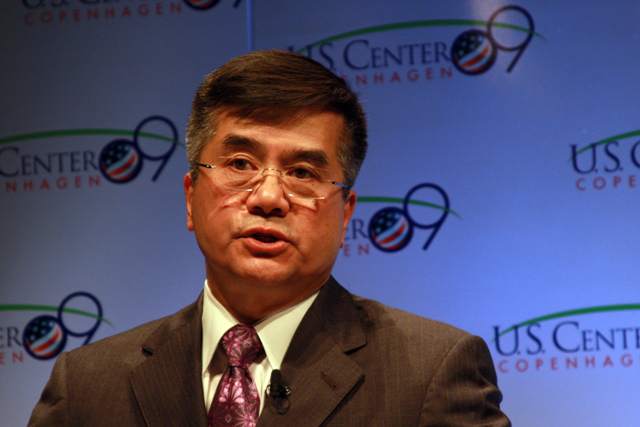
Clean Energy Jobs in a Global Marketplace at COP-15

U.S. Secretary of Commerce Gary Locke gives a keynote presentation at the U.S. Center: “Clean Energy Jobs in a Global Marketplace” in Copenhagen, Denmark December 11, 2009.